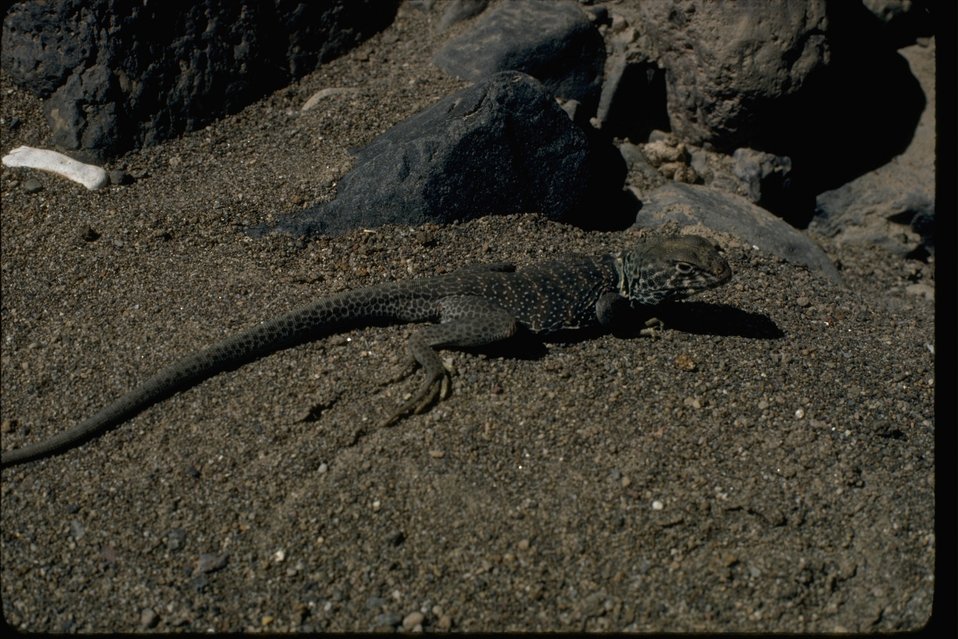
A Collar Lizard found in the Dry Creek Wilderness Study Area. OR 3-53